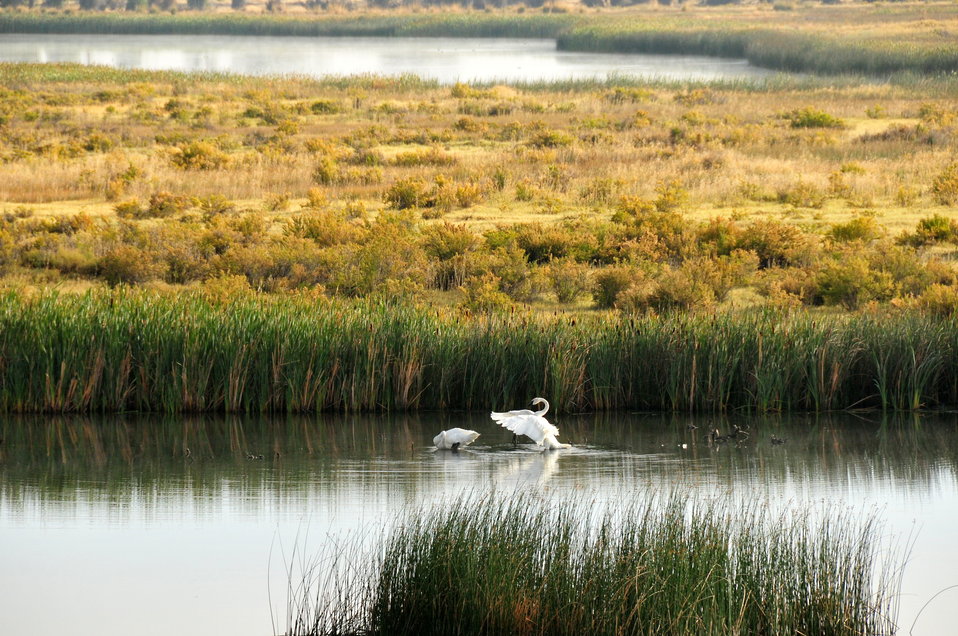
Trumpeter Swan pair on Seedskadee NWR

Seedskadee NWR has been part of the range expansion program for trumpeter swans in Wyoming for over 2 decades. Up to 7 pairs now successfully nest each year. The highly productive wetlands on Seedskadee NWR produce almost half of the swans that fledge in Wyoming each year.